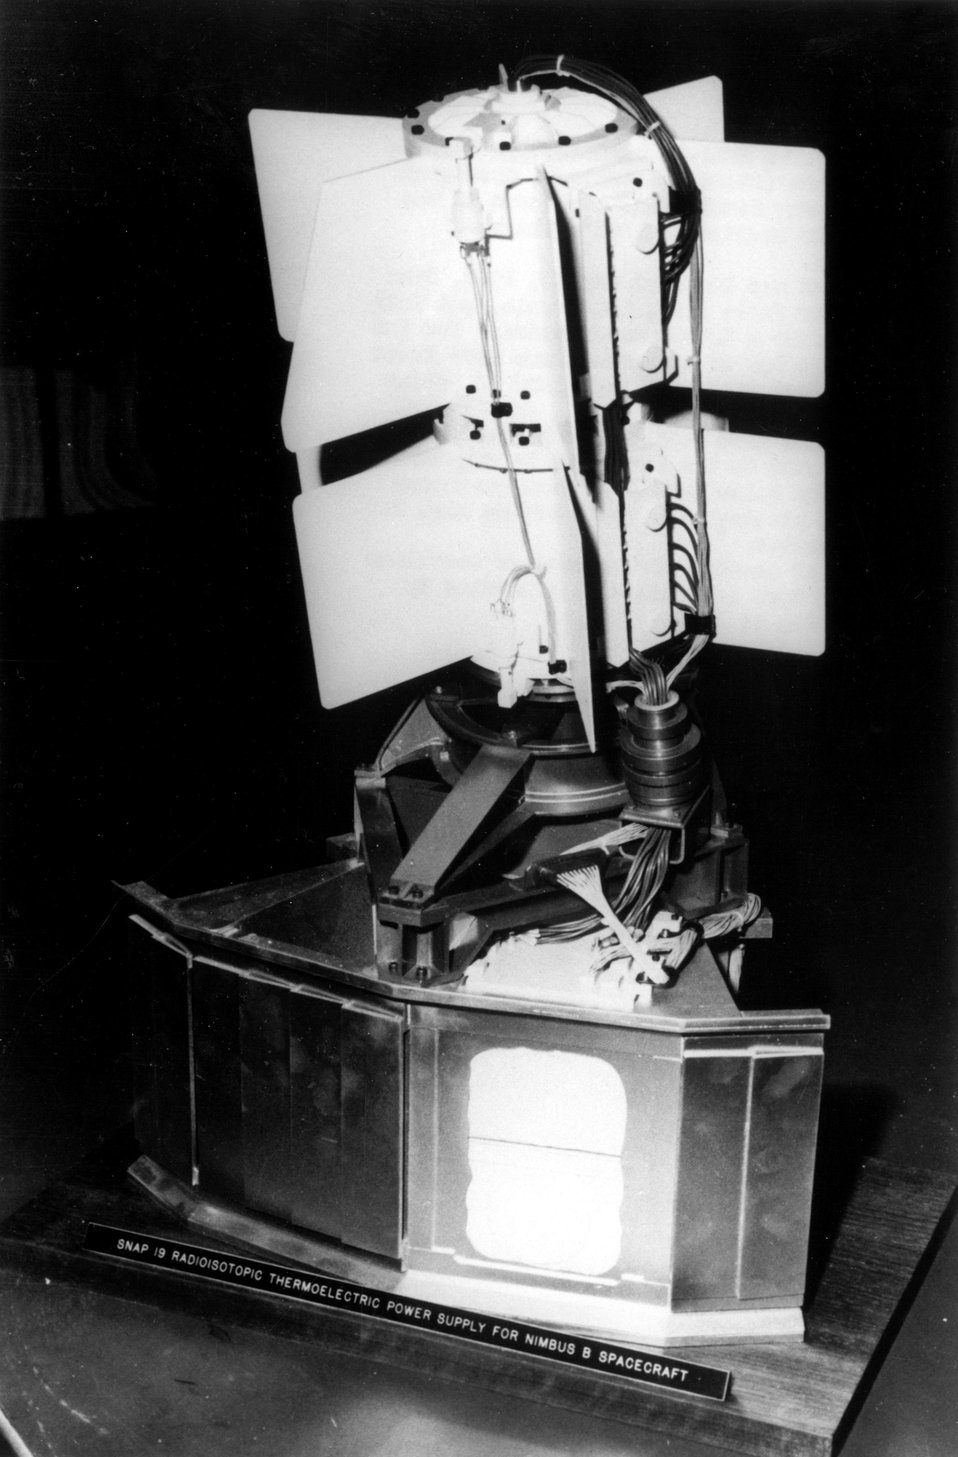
SNAP-19 Model... Two SNAP-19 radioisotope thermometric generators (atomic batteries), developed by the Atomic Energy Commission, are shown in the positions they were mounted on NASA's Nimbus-B weather satellite.